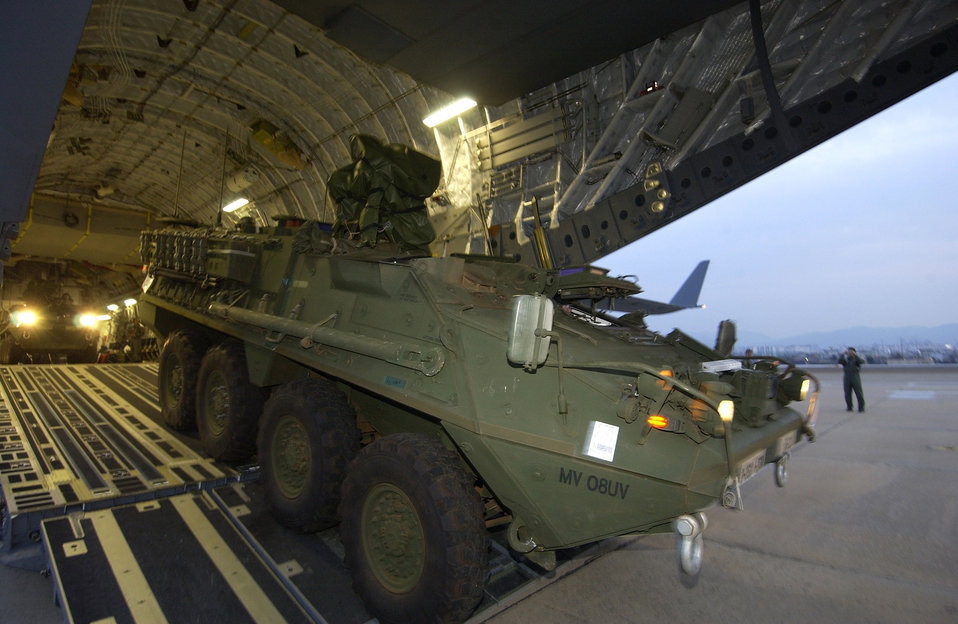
C-17 delivers carrier vehicles

Soldiers from the 27th Infantry Division offload an M1126 Stryker infantry carrier vehicle from a C-17 Globemaster III March 18 in Daegu, South Korea, for Exercise Foal Eagle 2007. The exercise focuses on strategic, operational and tactical aspects of military operations in the Korean theater of operations.